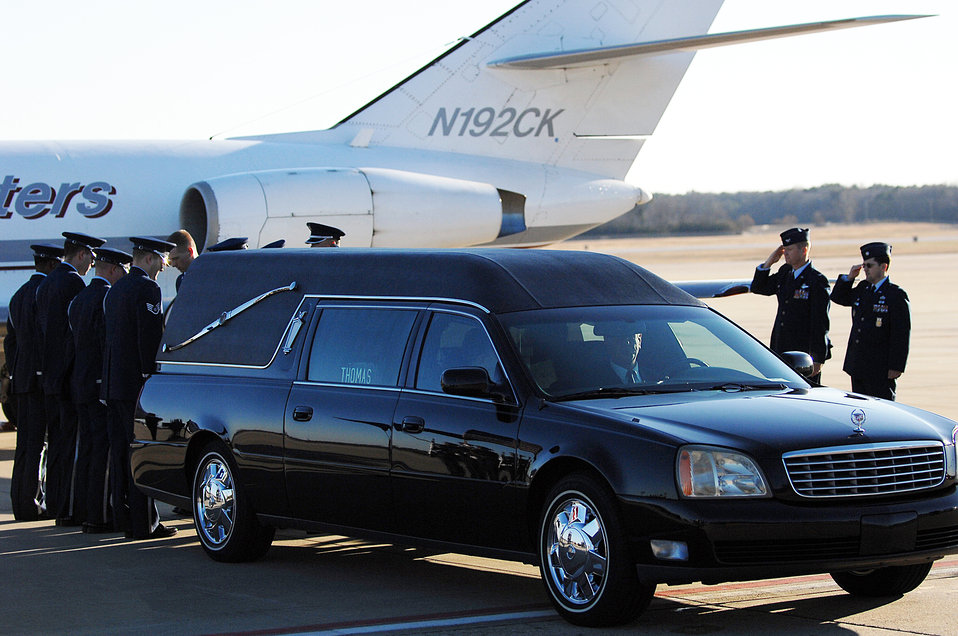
Team Seymour provides honors for fallen Airman

Col. Mark Kelly and Lt. Col. William Mazzeno salute Tech. Sgt. Adam Ginett, during a dignified transfer ceremony Jan. 25, 2010, at Seymour Johnson Air Force Base, N.C. Sergeant Ginett, a fallen explosive ordnance disposal technician, died of wounds incurred from an improvised explosive device near Kandahar Airfield, Afghanistan, Jan. 19, 2010. Colonel is the 4th Fighter Wing commander and Colonel Mazzeno is the 4th Civil Engineer Squadron commander.